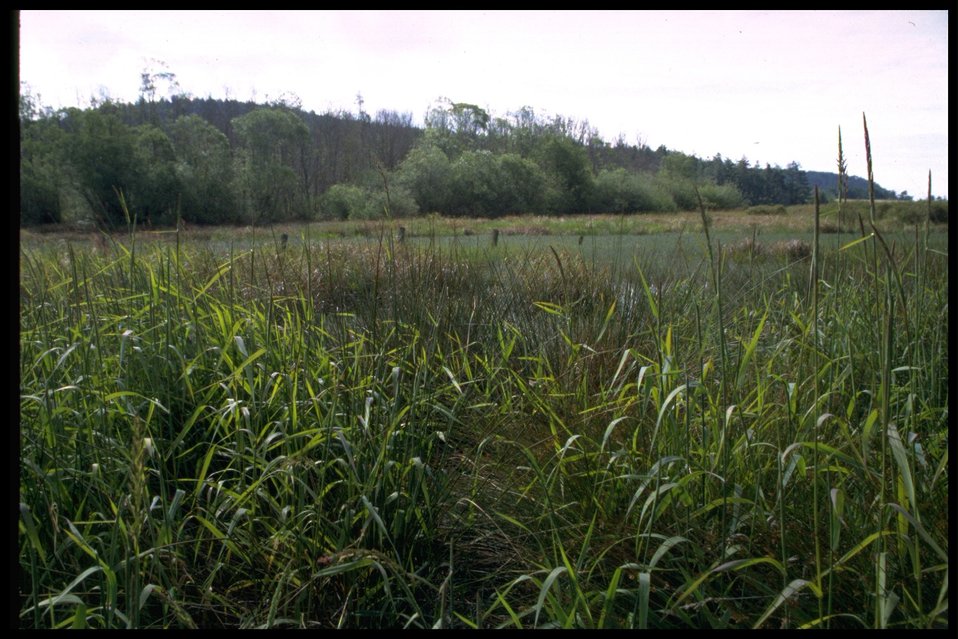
Chadwick Hill Marsh.